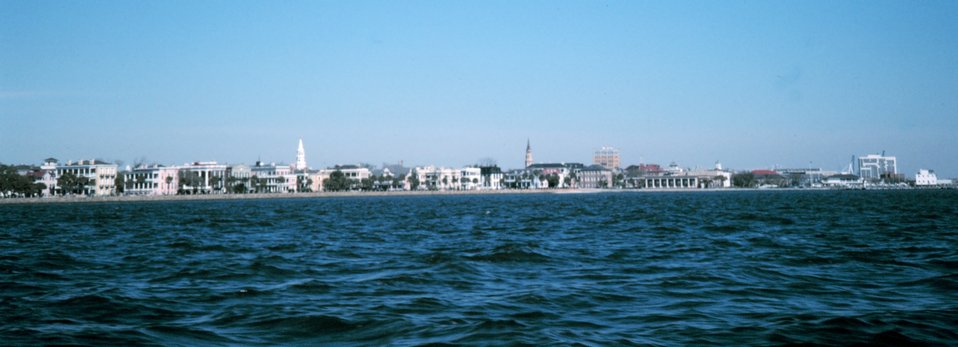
The skyline of Charleston as seen looking from the west.